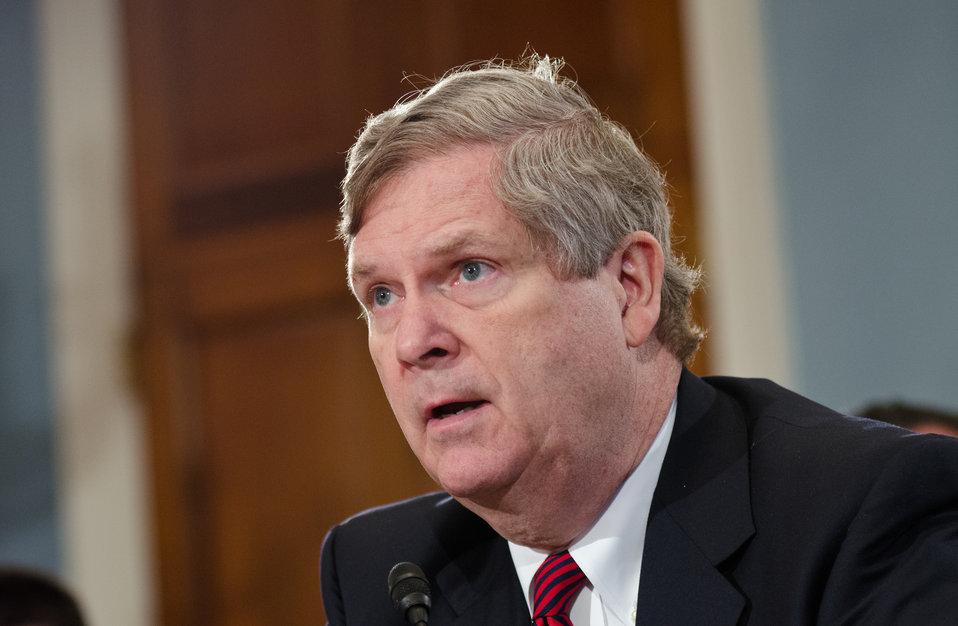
Agriculture Secretary Tom Vilsack testifies before the House Agriculture Committee regarding the “State of the Rural Economy“ at the Longworth House Office Building in Washington, D.C. on Tuesday, Mar. 5, 2013.